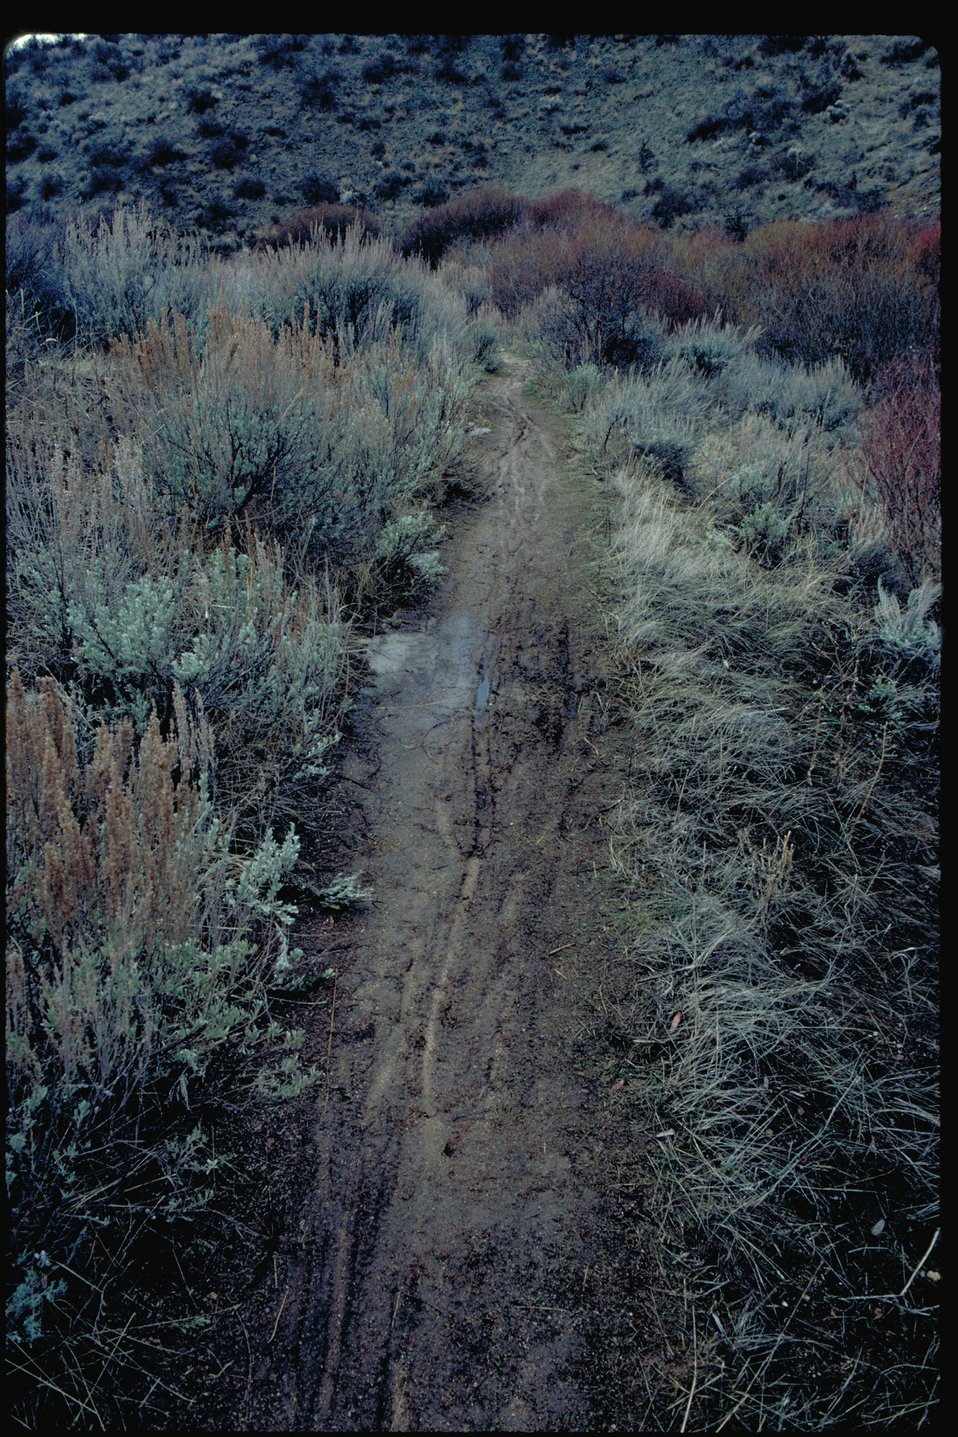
Hulls Gulch Bike abuse Boise Front Four Rivers Field Office LSRD Lower Snake River District